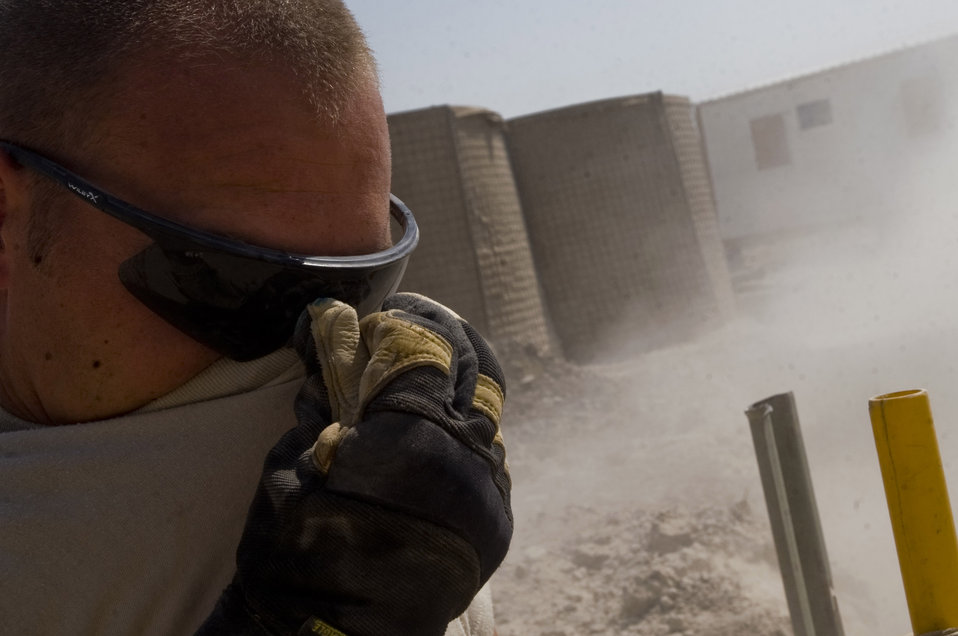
Breaking ground

Staff Sgt. Trevor Petersma protects his face from sand as it is poured into a trench Aug. 15 at Ali Base, Iraq. In the transition from tents to trailers, the 407th Expeditionary Civil Engineer Squadron is rerouting the power supply and laying water and sewage systems. Sergeant Petersma, a utilities systems craftsman with the 407th ECES, is deployed from Malmstrom Air Force Base, Mont.